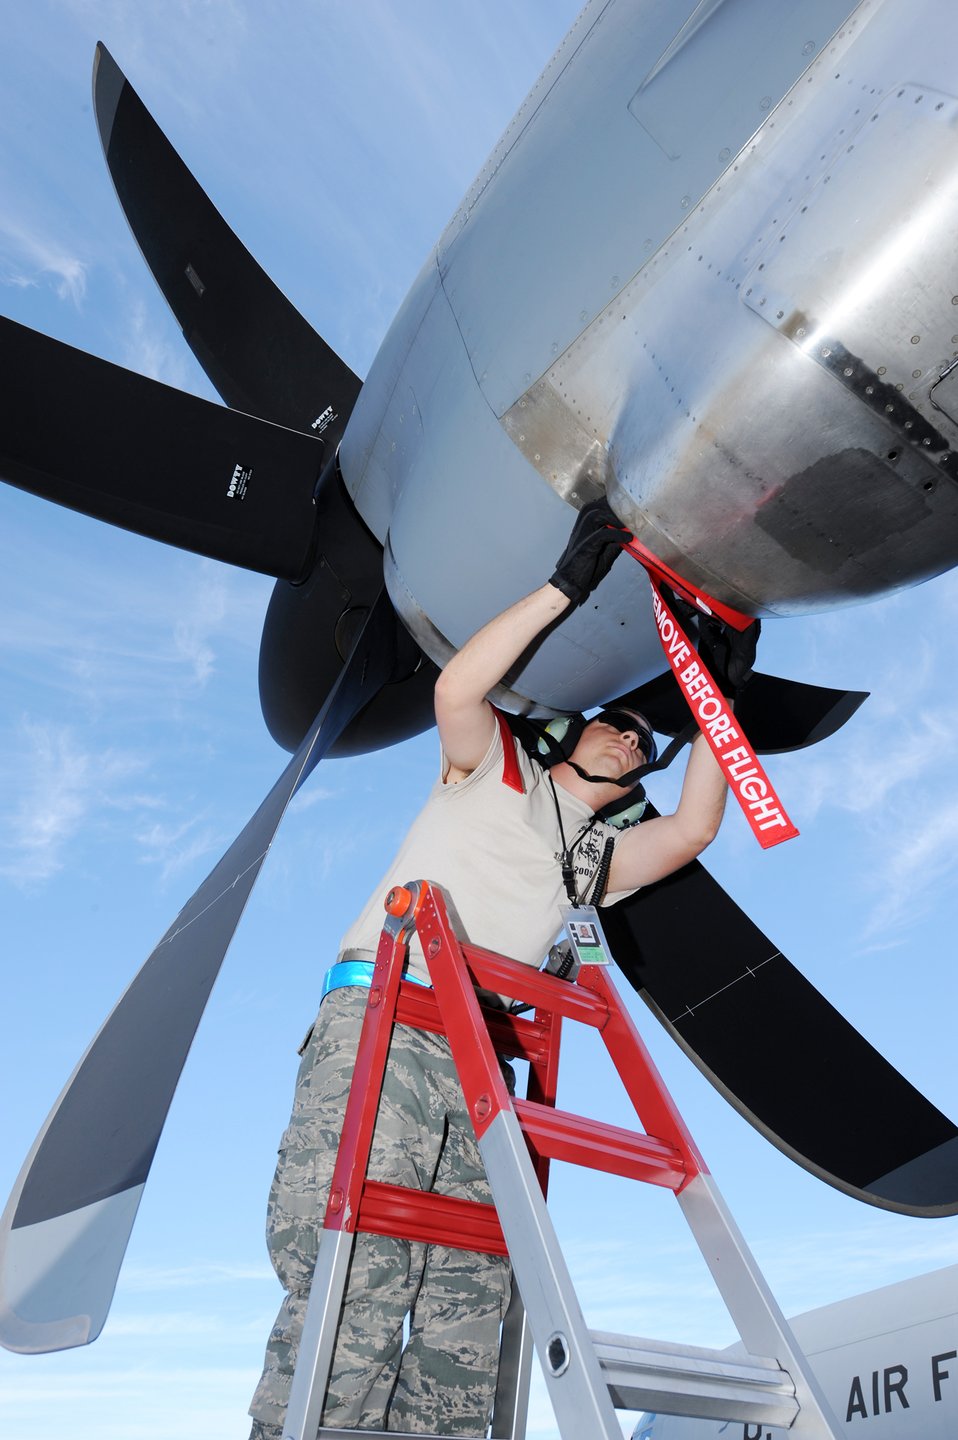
Let's take a good look

Tech. Sgt. Craig Arbogast inspects a C-130 Hercules after its arrival at McChord Air Force Base, Wash., for Air Mobility Rodeo 2009 July 18. Rodeo is an international combat skills and flying operations competition that develops and improved techniques and procedures. Sergeant Arbogast is an aircraft engine mechanic assigned to the 86th Aircraft Maintenance Squadron at Ramstein Air Base, Germany.